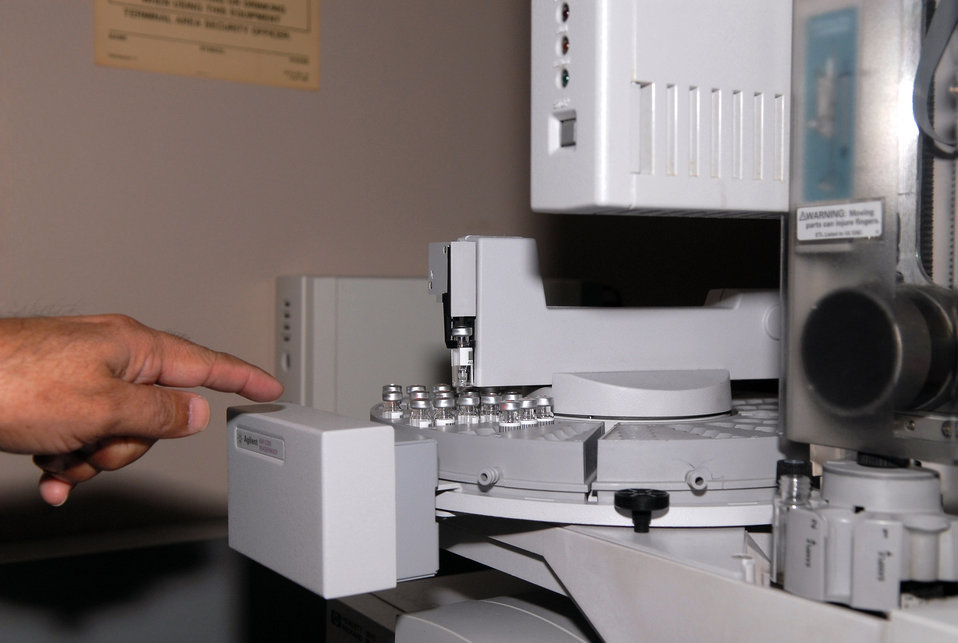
Guard's counterdrug warriors endeavor to test all

A lab specialist at the military drug testing facility at Brooks City-Base, Texas, points out samples prepared for analysis with a gas chromatograph/mass spectrometer. The laboratory's high-tech equipment can find and identify all drugs present.